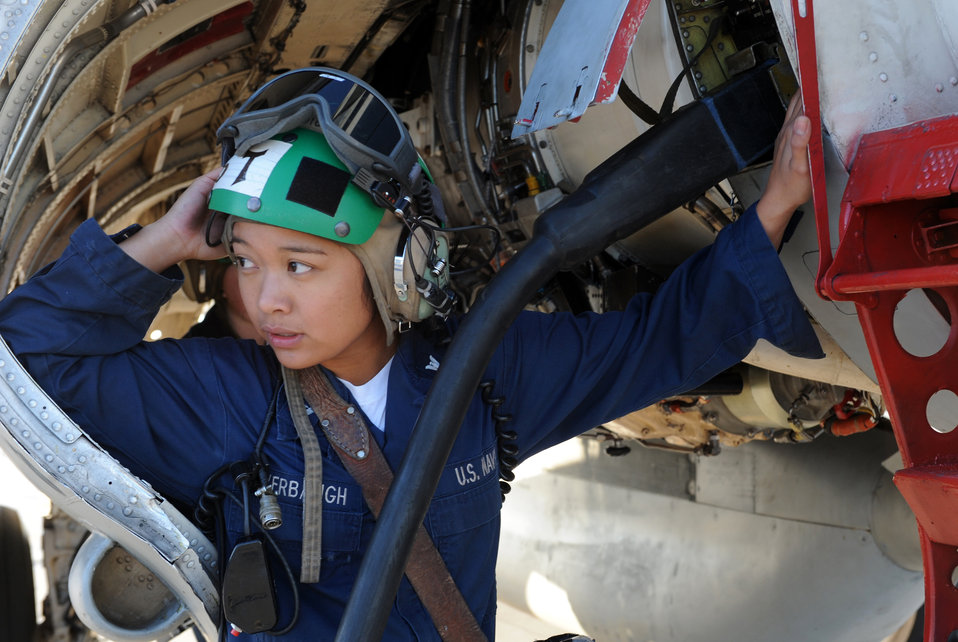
Gunfighter Flag wraps up

Petty Officer 3rd Class Melinda Overbaugh, an avionics technician 3rd class from Tactical Electronic Attack Squadron 137 at Whidbey Island Naval Air Station, Wash., connects power to an EA-6B Prowler Sept. 24, 2009, during Gunfighter Flag. The EA-6B Prowlers participated as friendly